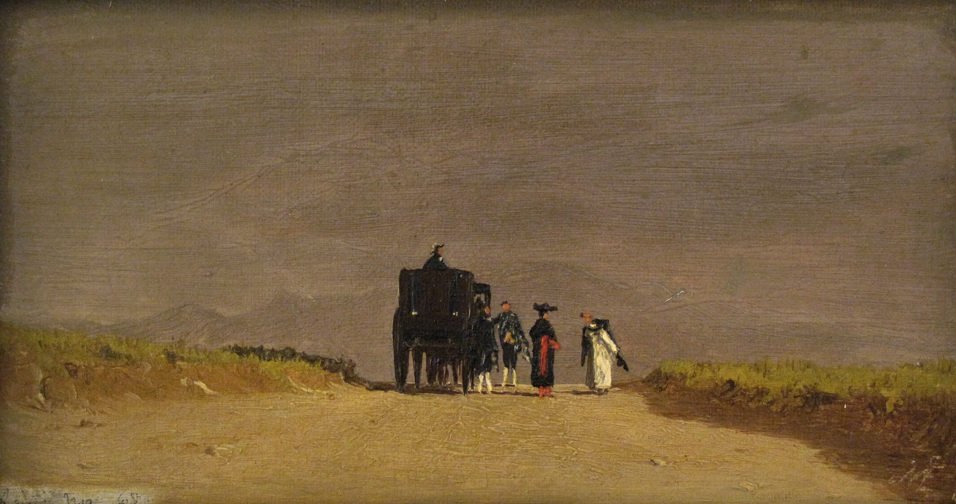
Journey's Pause in the Roman Campagna, oil on canvas painting by Jervis McEntee, 1868, Samuel Dorsky Museum of Art